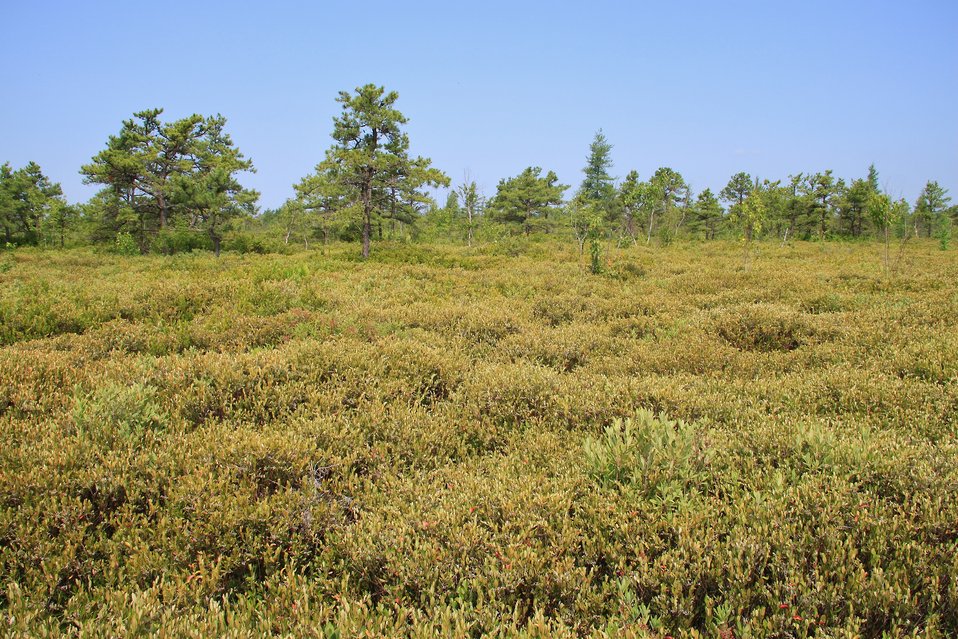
Maquam Bog at Missisquoi National Wildlife Refuge.